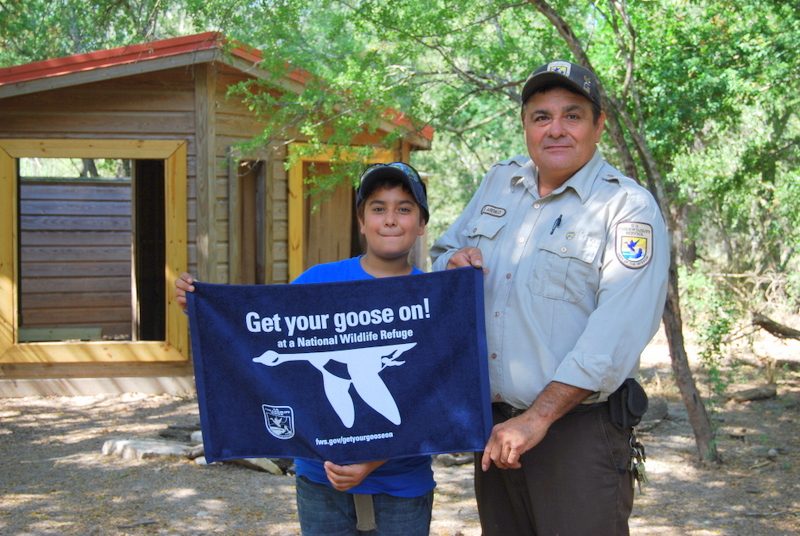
Get Your Goose On!

Photo taken at Santa Ana National Wildlife Refuge in southern Texas.